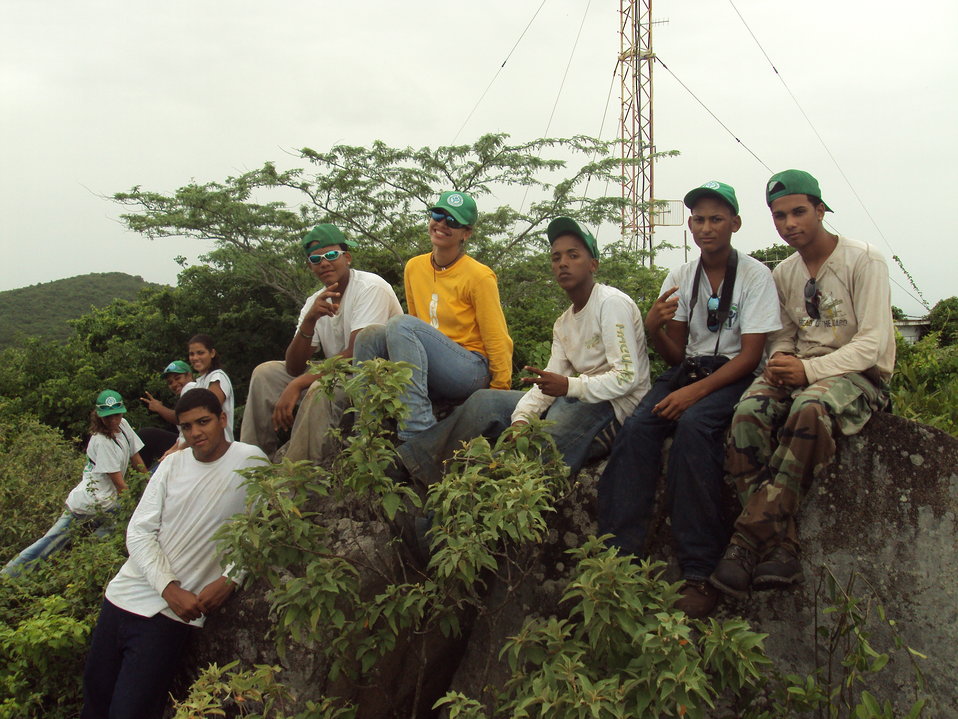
Culebra Natl Wildlife Refuge, Puerto Rico

Youth Conservation Corps (YCC) crew